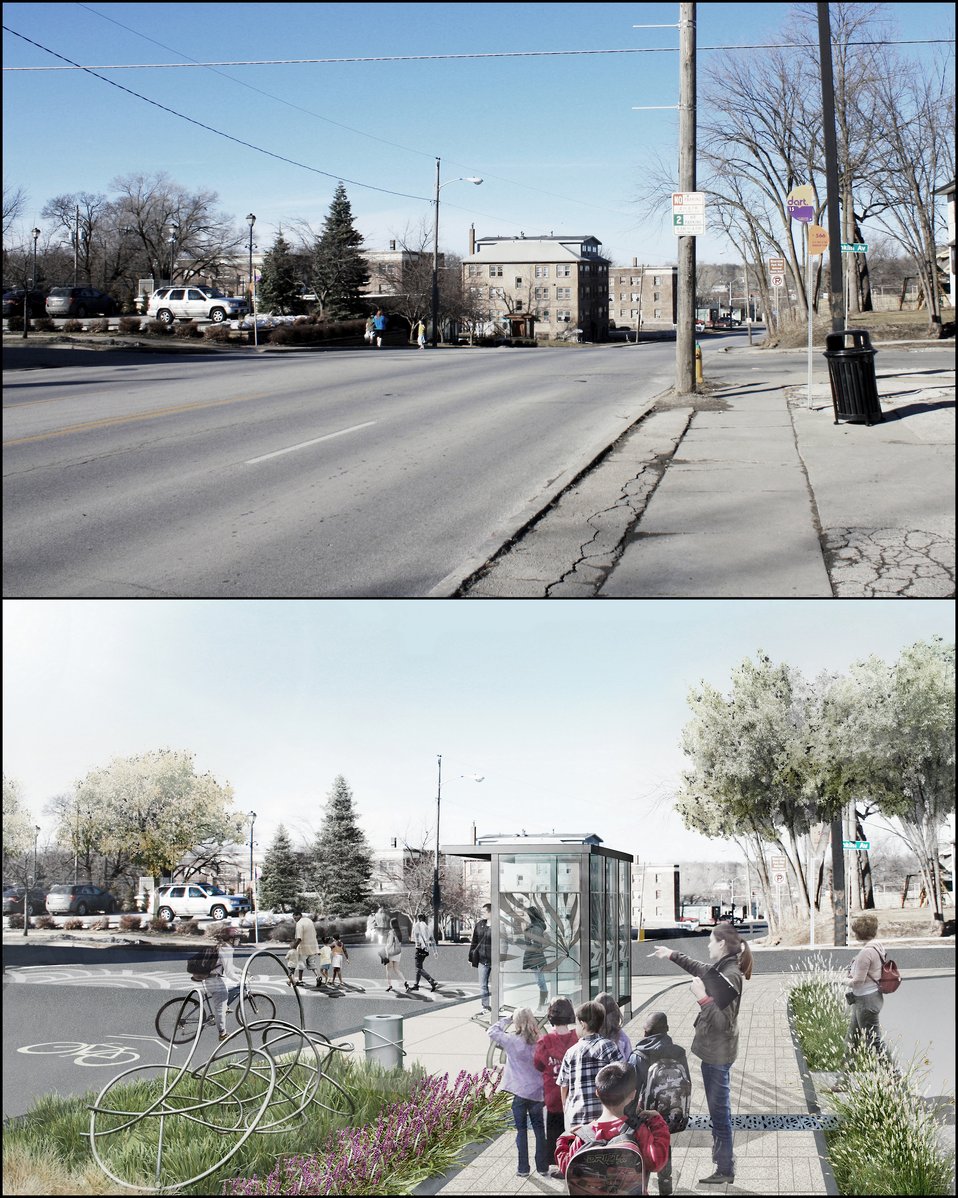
Greening America’s Capitals Before / After, Des Moines, IA

A redesign option for 6th Avenue provides landscaped areas to absorb and clean stormwater, local art within public infrastructure, and new bus shelters. In addition, street and crosswalk improvements make walking and biking safer and more enjoyable.

www.epa.gov/smartgrowth/greencapitals.htm

EPA's Greening America's Capitals program helps cities include sustainable design strategies --such as green infrastructure -- in their planning and development. These concepts lead to distinctive neighborhoods that enjoy multiple social, economic, and environmental benefits. Cities are selected through a competitive application process, and many have begun to implement these enhancements with private, as well as local, state, and other federal, investments.

December 3, 2013